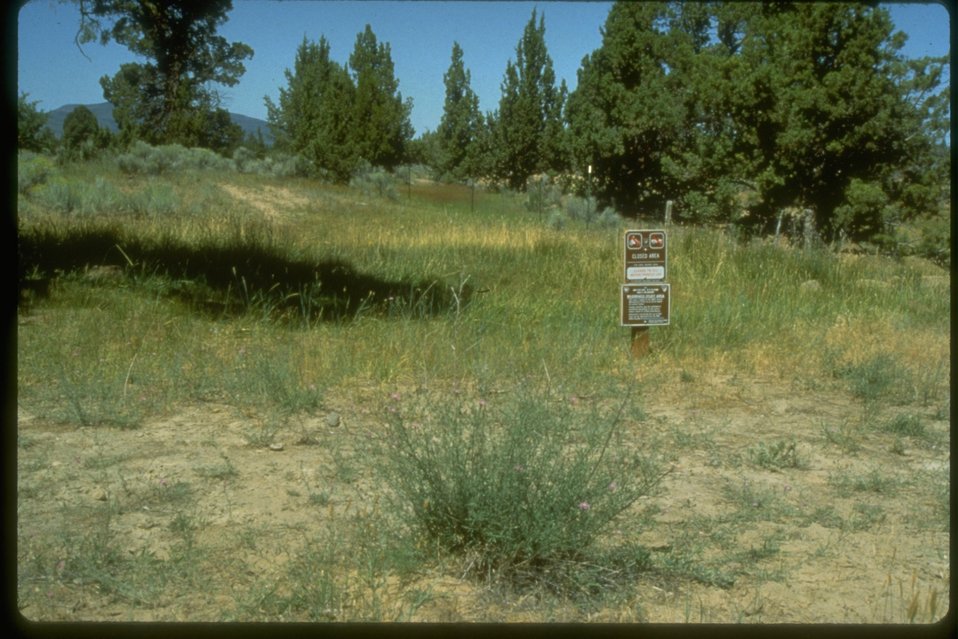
Spotted Knapweed near trail head to Badland, Wilderness Study Area.